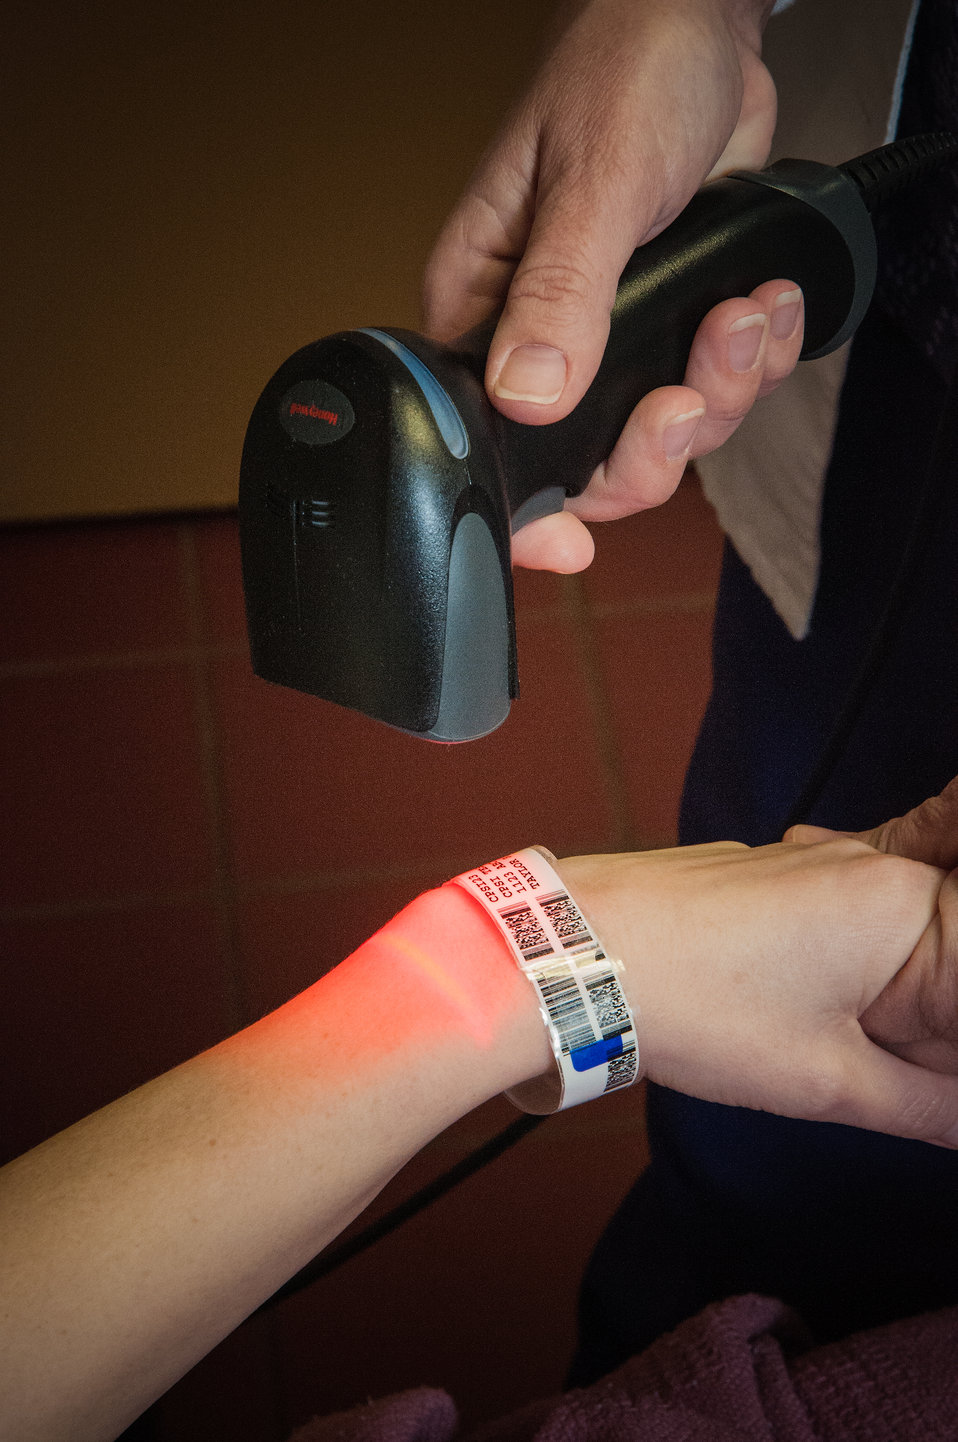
A patients’ wristband is scanned into the Electronic Medical Records System at the R.J. Taylor Memorial Hospital, Inc. in Hawkinsville, GA on Mar. 6, 2013. The hospital is a licensed private, not-for-profit acute care facility providing emergency, specialty and primary health care in an area of rural Georgia that has a high percentage of people living below the state average poverty level and considered most economically distressed. The hospital has purchased an Electronic Medical Records System under an incentive program by the Federal government through the U.S. Department of Agriculture (USDA) Rural Development (RD) Community Facilities Loan (CF) that ensures fiscally responsive access to superior quality integrated health care. Electronic Medical records are essentially an electronic point-of-care capture of medical data that can be easily accessed and allow for integration across different health care settings by embedded internet-work connected information systems. Such records may include a wide range of data in comprehensive or summary form, including demographics, medical history, medication allergies, immunization status, laboratory test results, radiology images and billing information. Patient data stored electronically is simplified for data gathering for running needed organizational, state, and federal reports including demographics, medical history, and medication allergies.